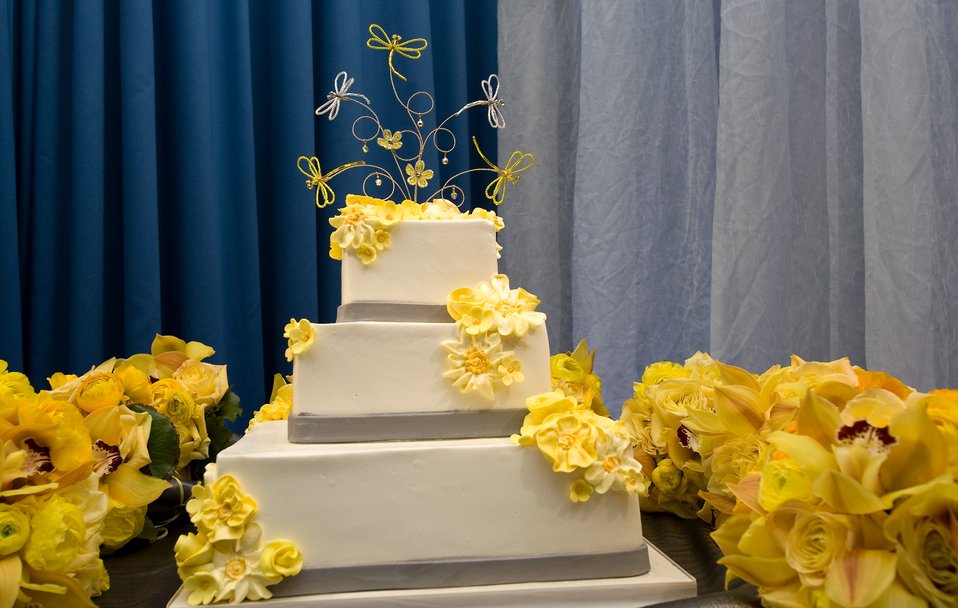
San Francisco Dream Wedding

Capt. Mike and Vanessa Hawkins' wedding cake on May 14, 2010, at the reception. The couple won the San Francisco Dream Wedding Giveaway with internet viewer votes. Mrs. Hawkins has been diagnosed with stage IV Hodgkin's lymphoma. Vendors donated $100,000 of goods and services to the couple's wedding day.